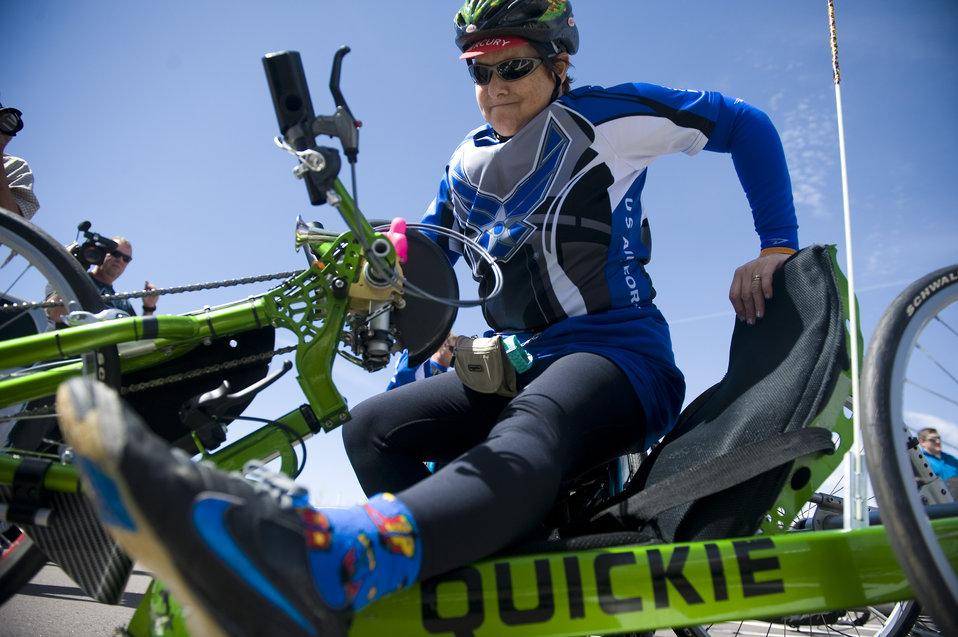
Warrior Games

Air Force athlete Jeanne Goldy-Sanitate hops onto her bike as the Air Force team begin their first cycle training session leading up to the Warrior Games, May 9, 2011, at the Air Force Academy. The Warrior Games help elevate abilities through athletic competition for wounded, ill, and injured service members by providing a focal event to empower the incorporation of athletics into military wounded warrior programs, the games run through May 16 – May 21.